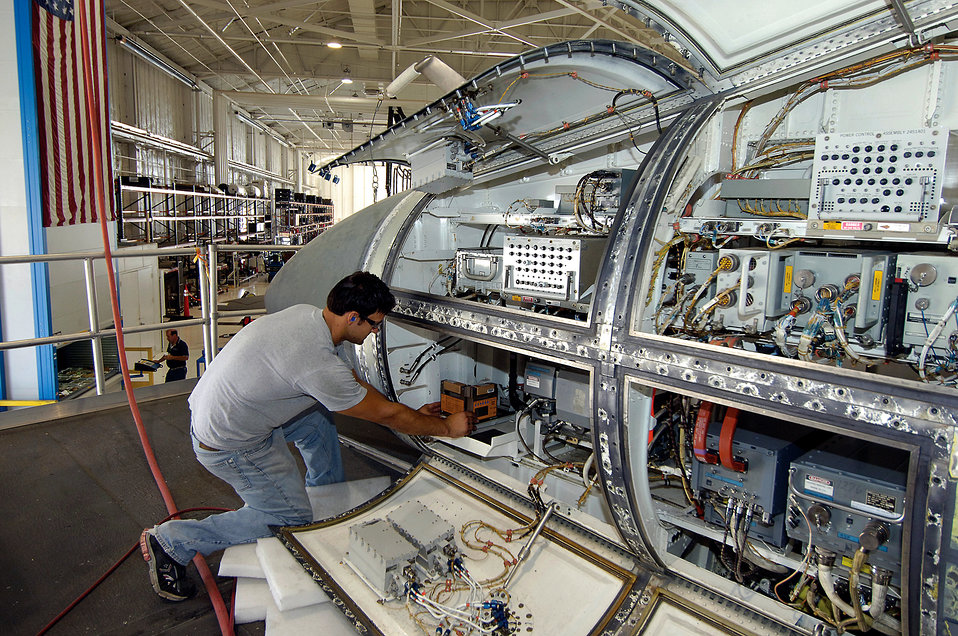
Tinker maintained B-1 milestone

Trevor Aldridge helps prepare a B-1 Lancer for a modification during maintenance June 4, 2010, at Tinker Air Force Base, Okla.